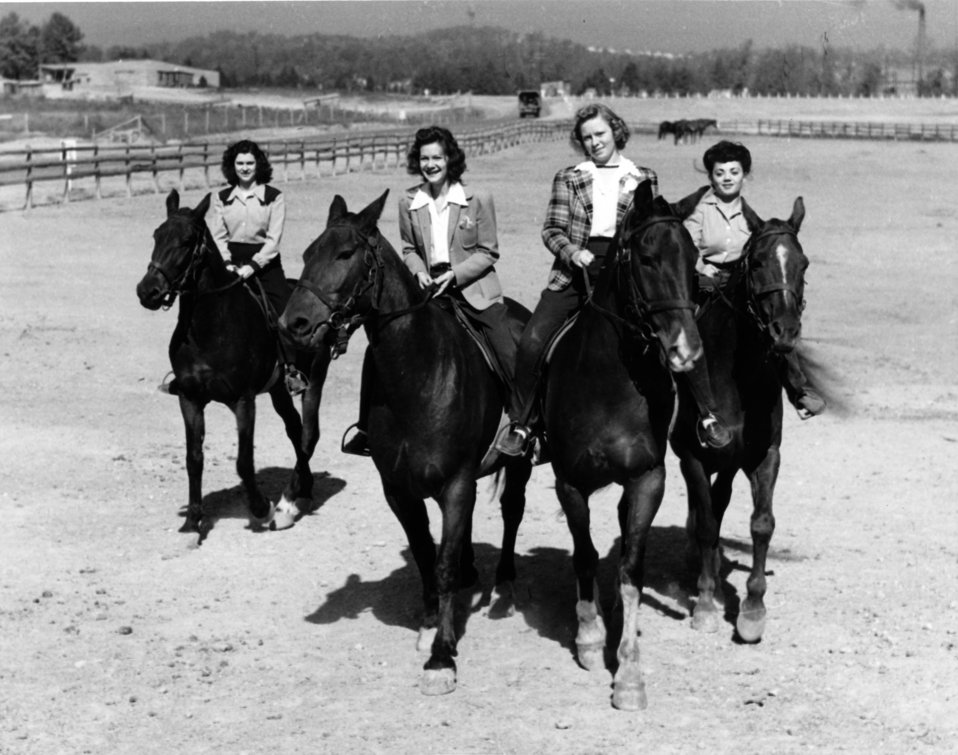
Recreation at Oak Ridge